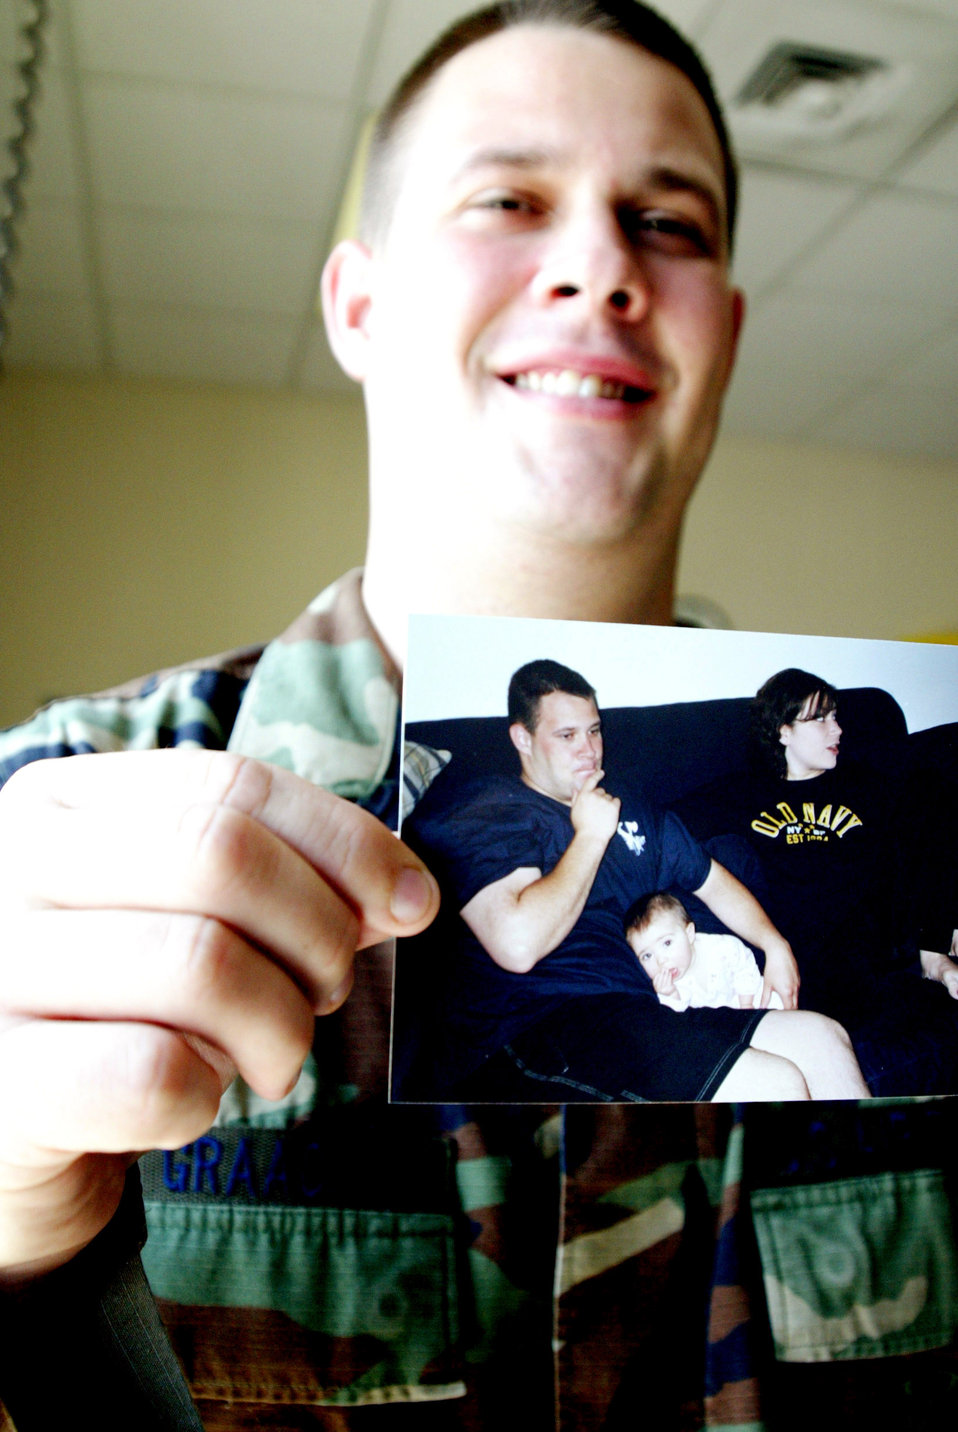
With a will, there's always a weigh

POPE AIR FORCE BASE, N.C. -- Senior Airman Brian Graack shows off a picture of himself a short time before he got the ultimatum to lose weight and get in shape or get out of the Air Force. Since training for his sixth and finally successful fitness test, Airman Graack scored a good rating, as opposed to past poor ratings. He is assigned to the 43rd Aircraft Maintenance Squadron.